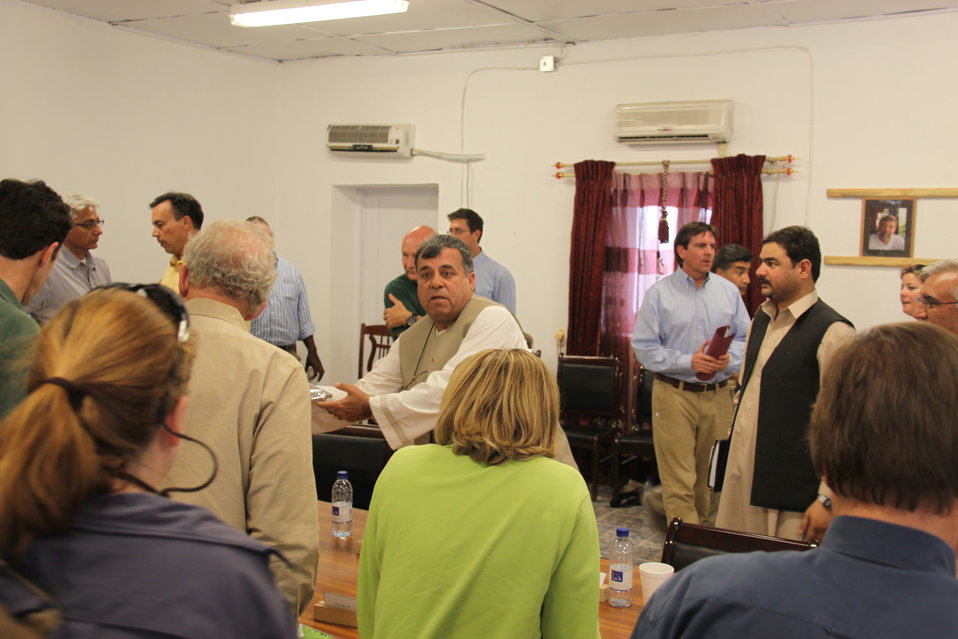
Meeting with Local Leaders in Kandahar